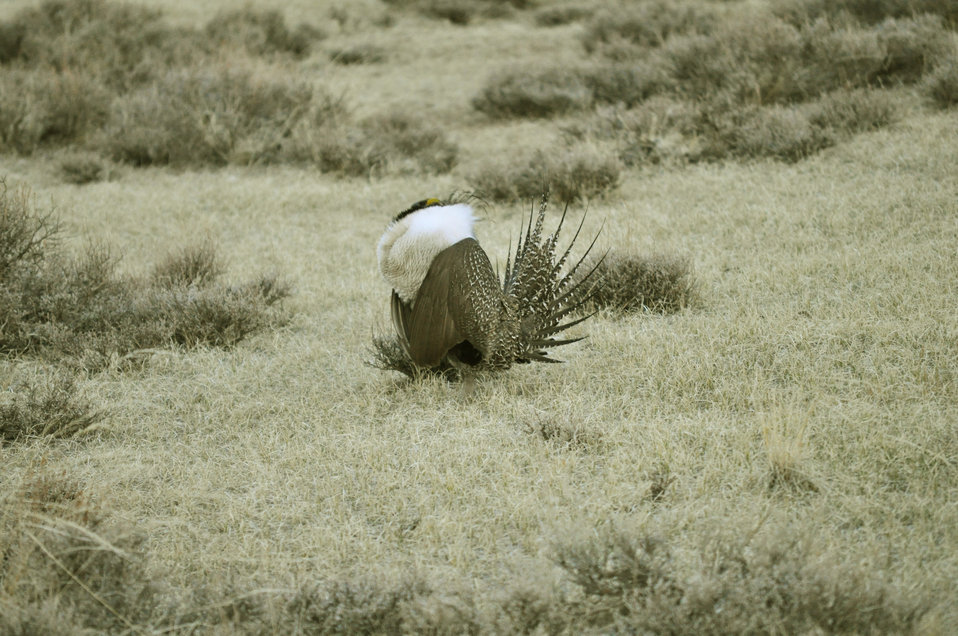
Male greater sage-grouse struts at lek (dancing or mating grounds) to attract females near Bodie, California.